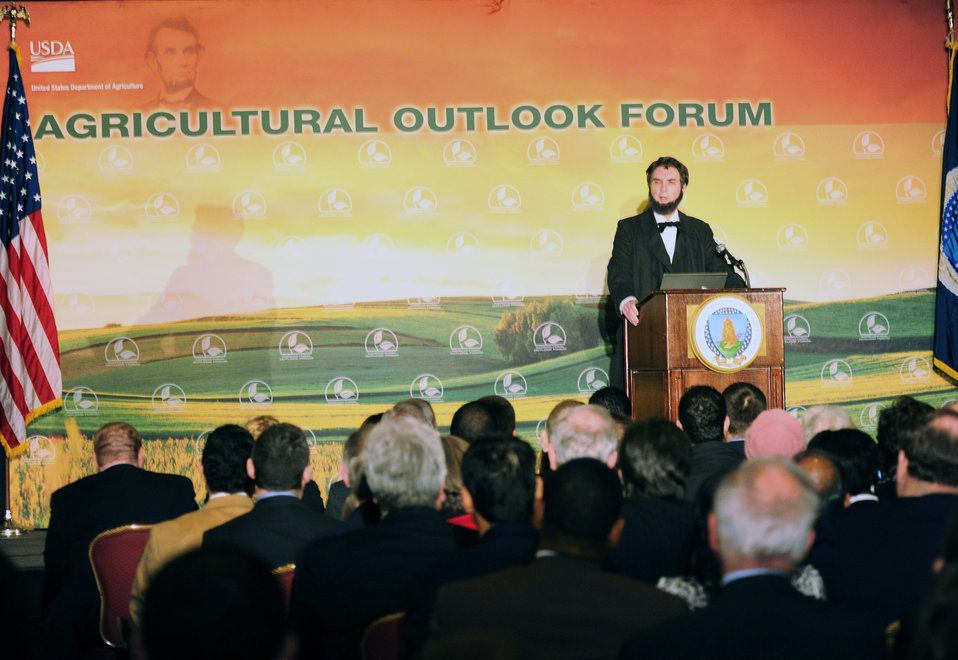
An Abraham Lincoln impersonator makes remarks at the 2012 Agricultural Outlook Forum, “Moving Agriculture Forward” in Arlington, VA., on Thursday, February 23, 2012.